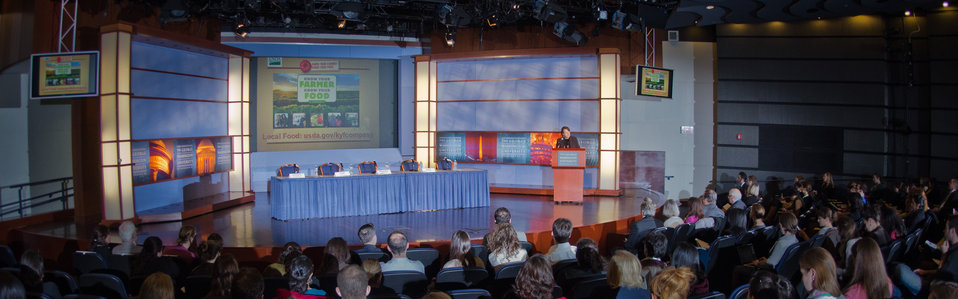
Agriculture Deputy Secretary Dr. Kathleen Merrigan keynote speaker 'Shaping the Farm Bill for a Sustainable Future.' Forum at the Trachtenberg School of Public Policy and Public Administration, George Washington University in Washington, D.C., on Thursday, March 1, 2012.